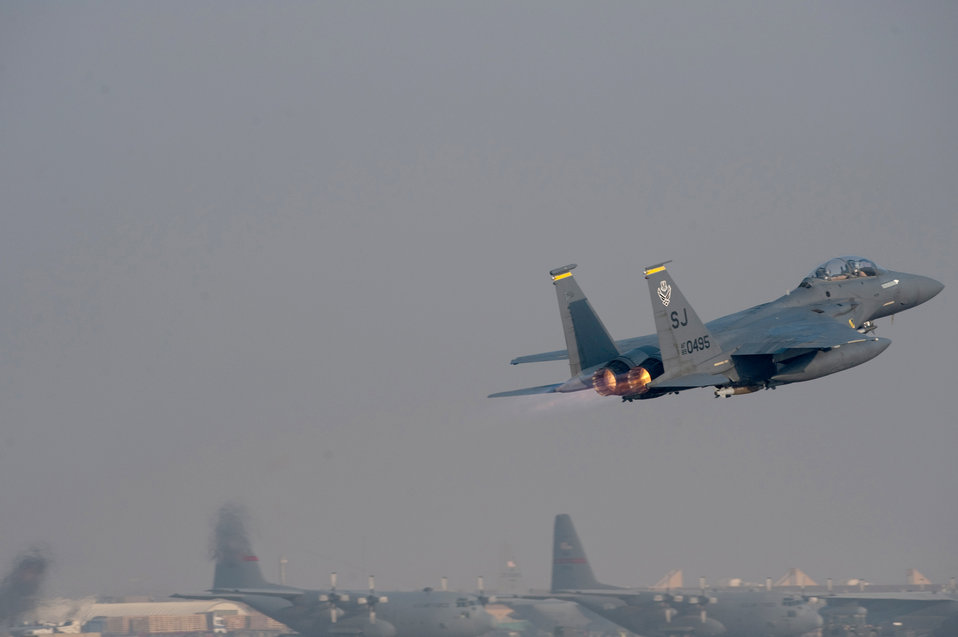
Mission preparation at Bagram

An F-15E Strike Eagle takes off on a mission Jan. 4, 2011 from Bagram Airfield, Afghanistan.